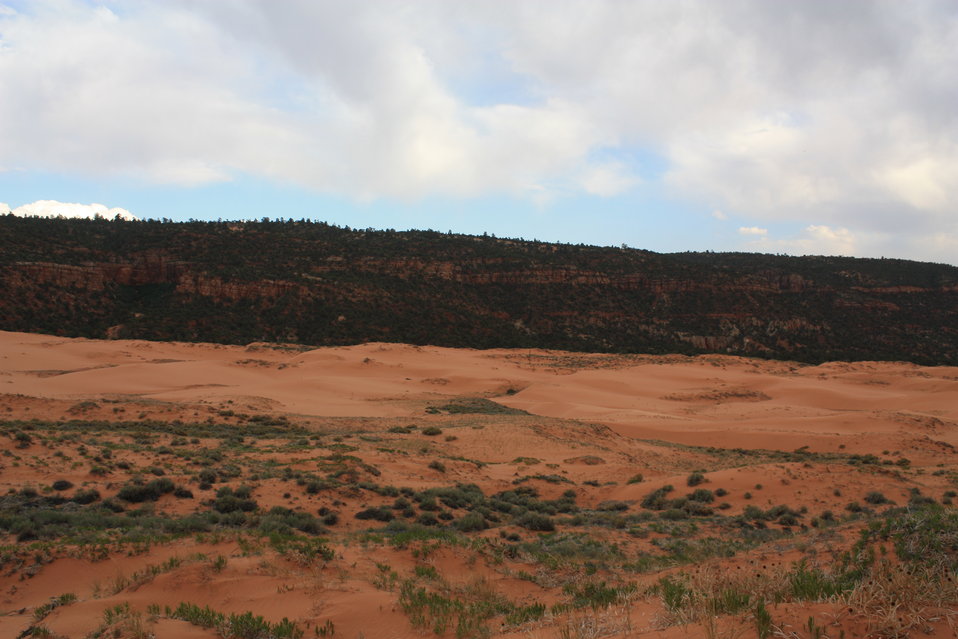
CPSDTB Habitat

The Coral Pink Sand Dune Tiger Beetle occurs within Kane County, Utah.